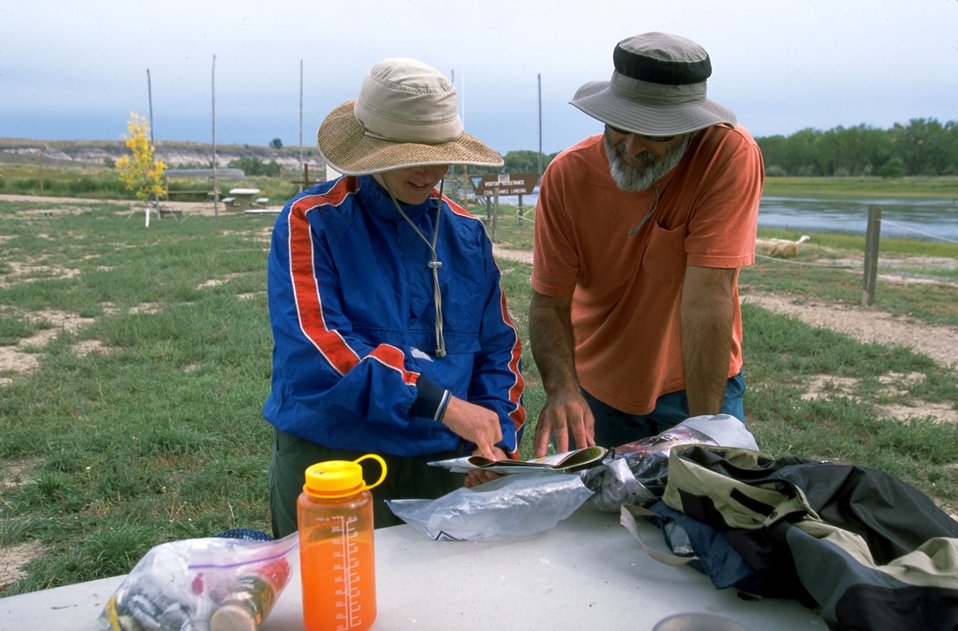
Visitor use at Coal Banks Landing on the Upper Missouri River